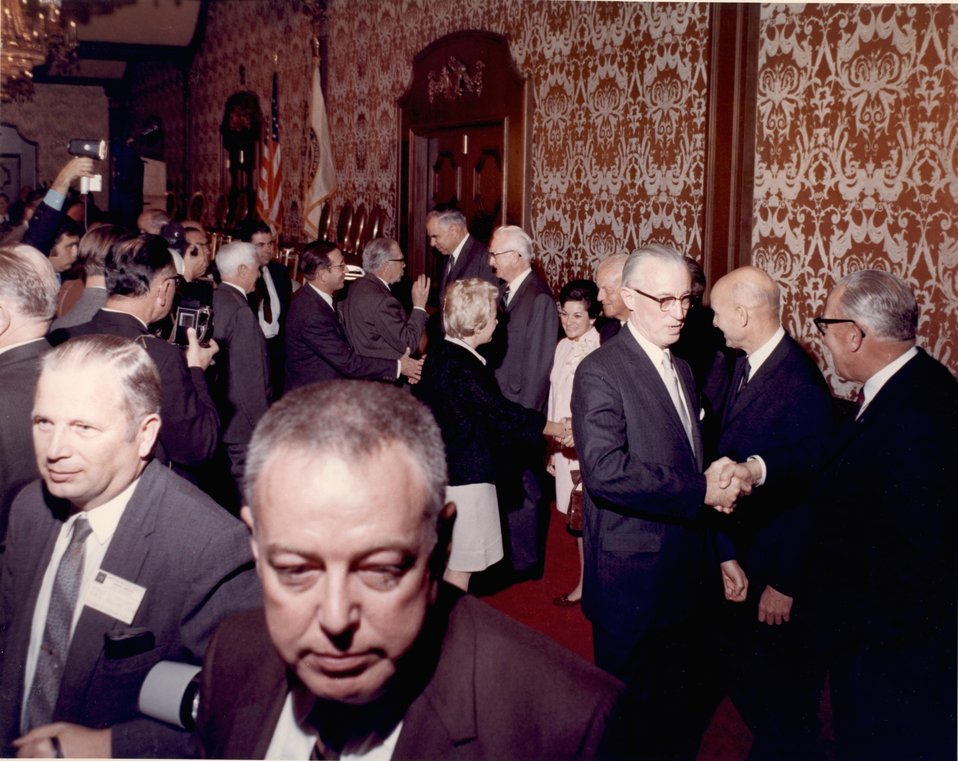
Enrico Fermi Award Ceremony. Imperial Ballroom. San Fransisco Hilton Hotel. 5:30 p.m., December 2, 1969. Fermi Award. Recipient: Walter Zinn. Date: Dec. 2, 1970.